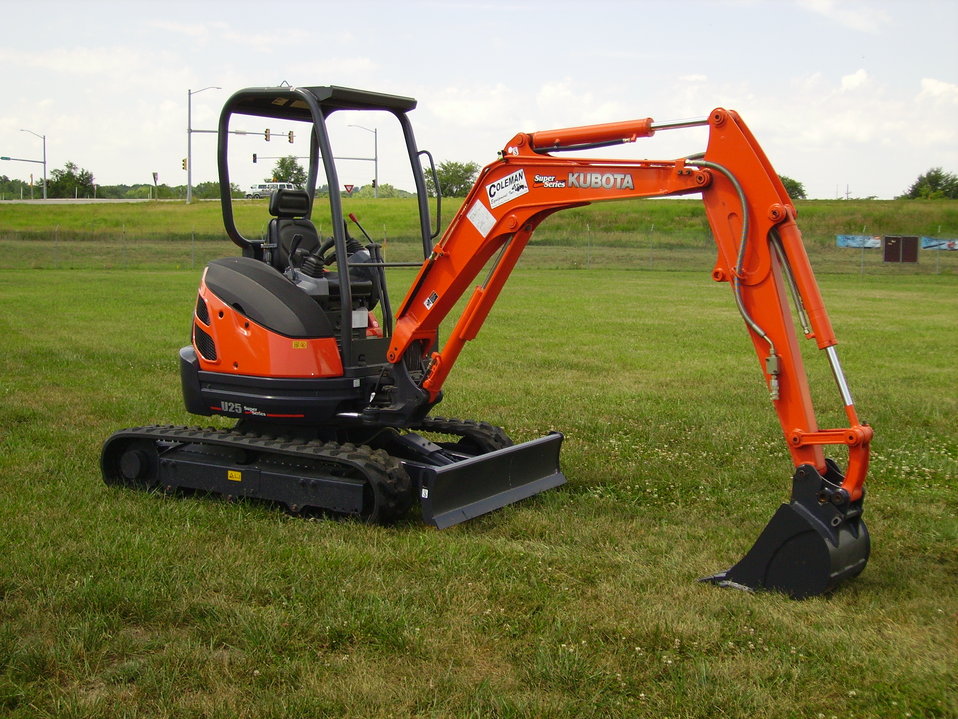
Kubota compact excavator